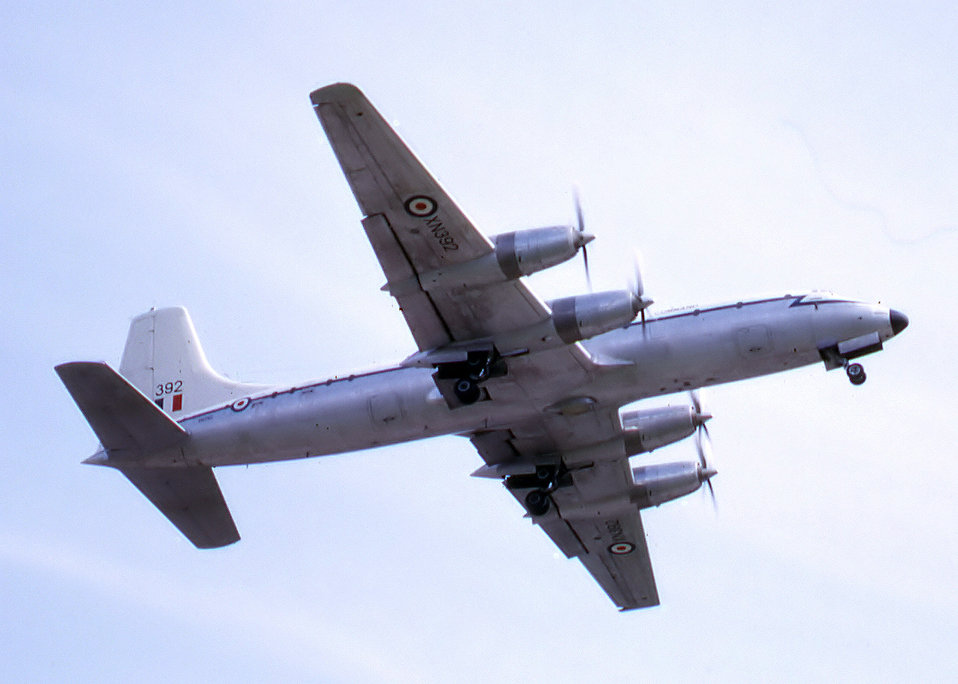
RAF Bristol Britannia in 1964